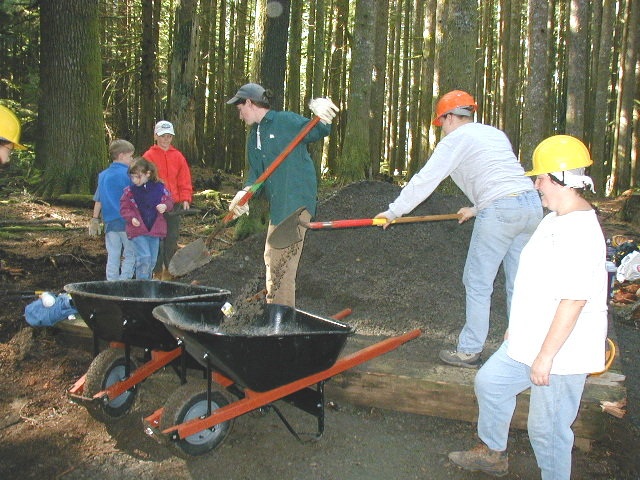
Gravel was loaded.....